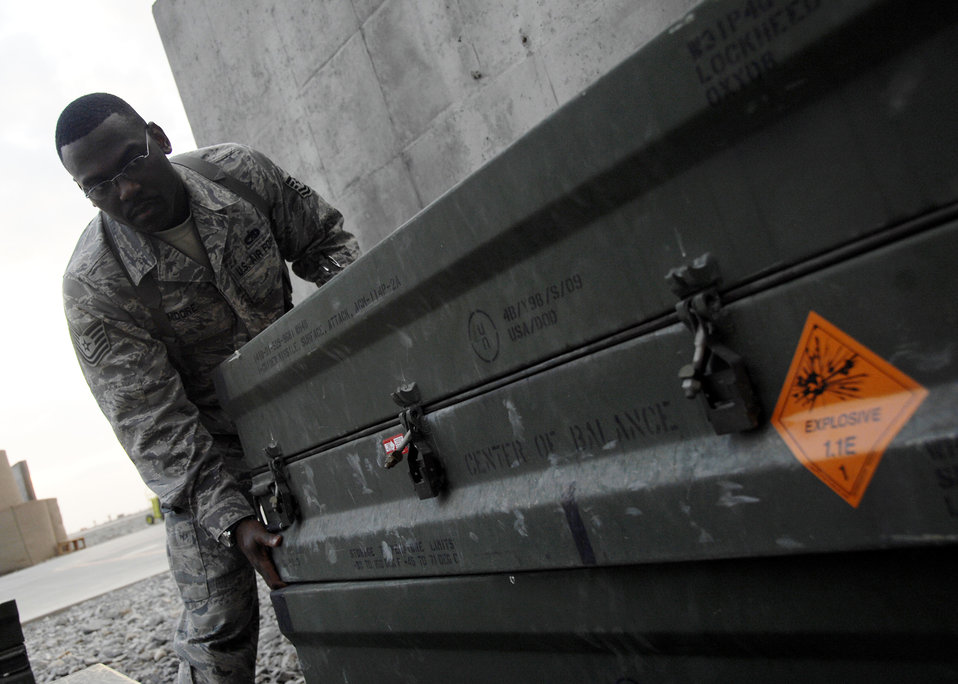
Kandahar Airmen focus on safety

Tech. Sgt. Anthony Moore monitors net explosive weights during a spot inspection on the flightline Dec. 3, 2009, at Kandahar Airfield, Afghanistan. Sergeant Moore is a weapons safety manager for the 451st Safety Office from Langley Air Force Base, Va.